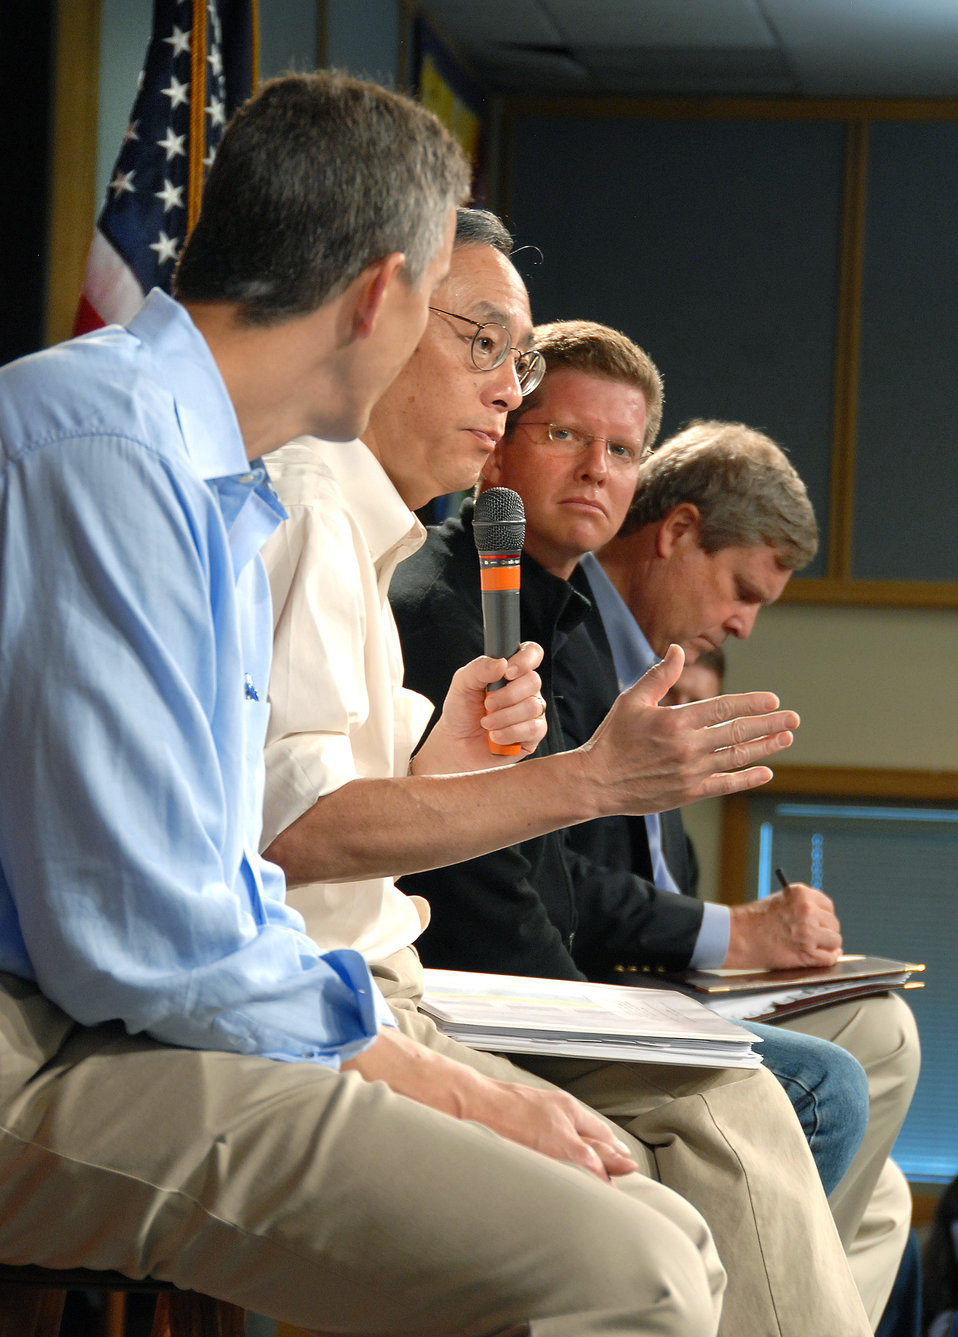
Rural Tour 0129

Rural Tour Alaska Aug 2009